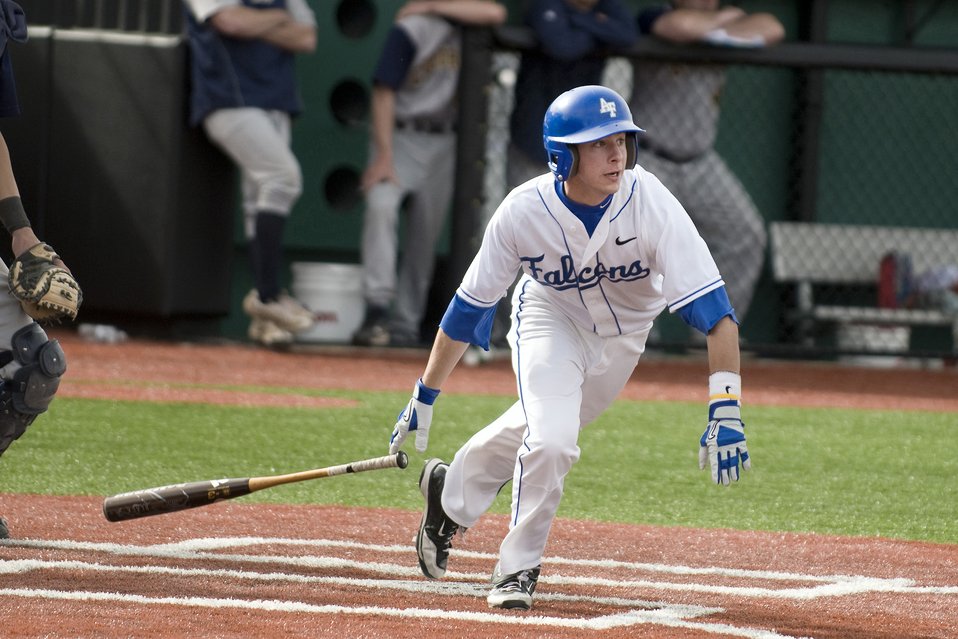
Falcons defeat the Cougars

Falcon freshman shortstop Matthew Roberts tosses the bat after connecting for his first career home run during the Falcons March 30, 2010 game against Colorado Christian held at the U.S. Air Force Academy's Falcon Field in Colorado. The Falcons defeated the Cougars 25-7.